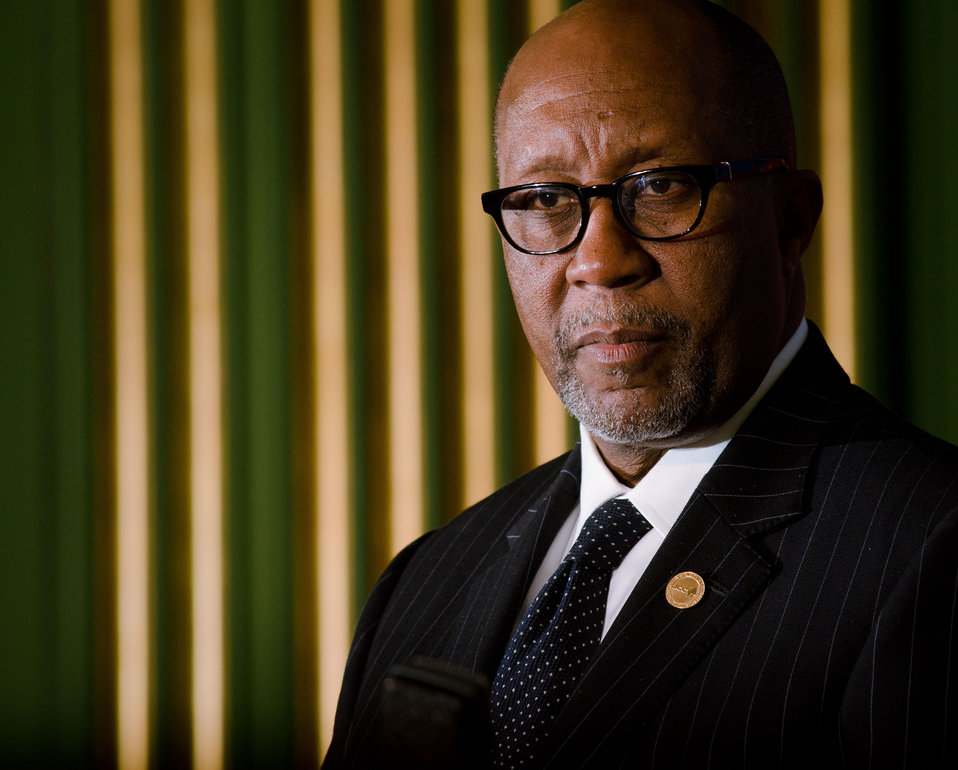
U.S. Trade Representative Ron Kirk listens to a question from international news media journalists at the 23rd Session of the U.S. China Joint Commission on Commerce and Trade (JCCT) at the Andrew W. Mellon Auditorium in Washington, D.C. on Wednesday, Dec. 19, 2012. The JCCT holds high-level plenary meetings on an annual basis to review progress made by working groups that focus on a wide variety of trade issues. These working groups meet throughout the year to address topics such as intellectual property rights, agriculture, pharmaceuticals and medical devices, information technology, tourism, commercial law, environment, and statistics.